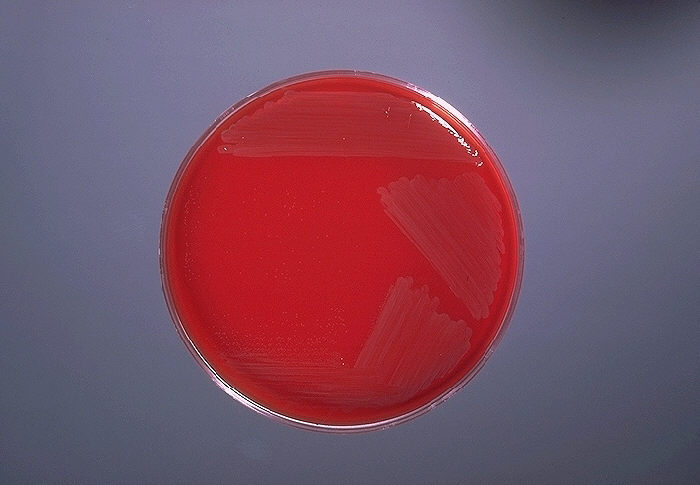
Blood agar plate culture of Campylobacter fetus s. intestinalis.